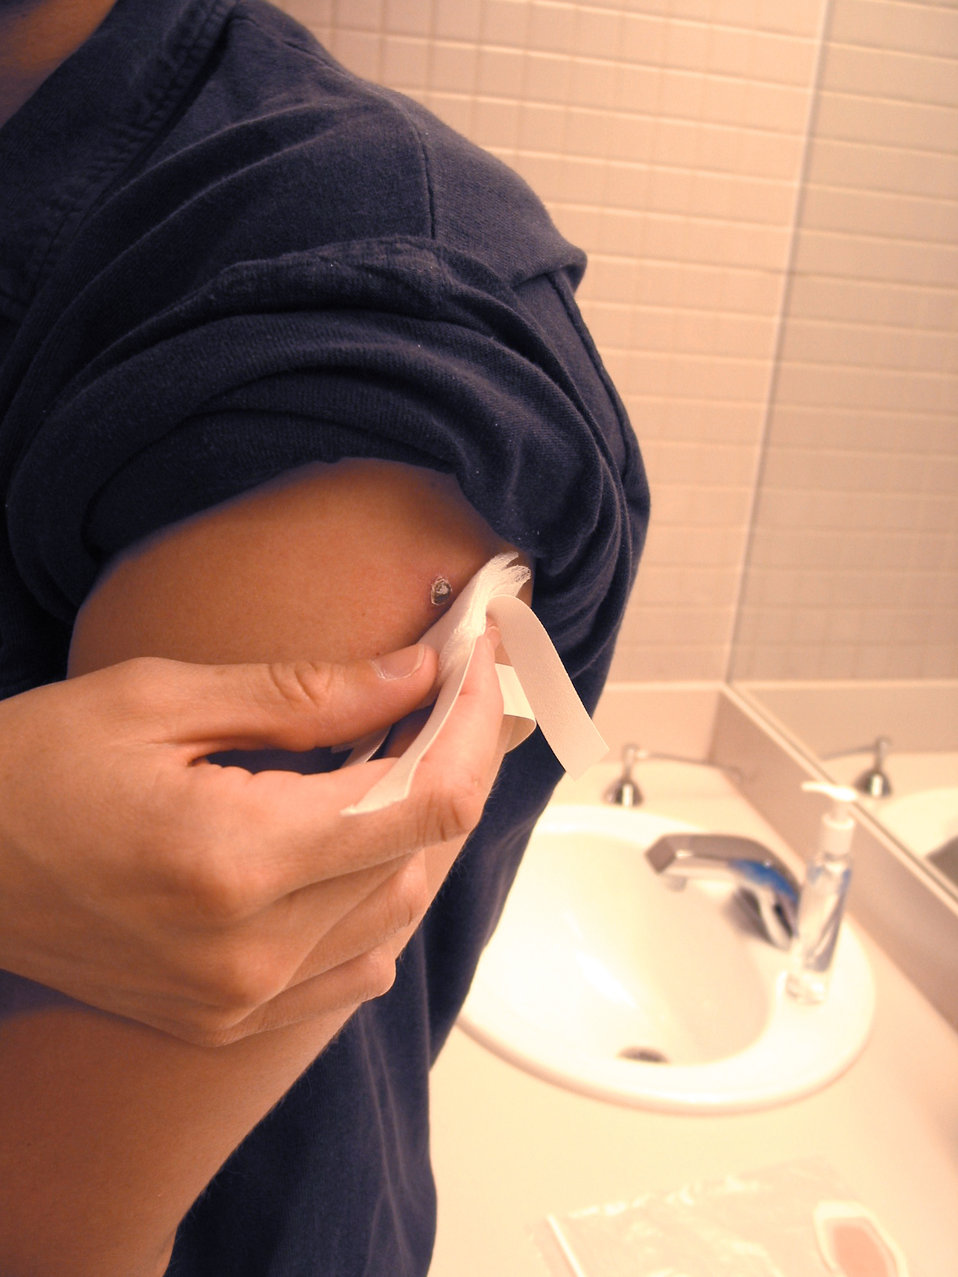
This demonstrates how a smallpox vaccinee covers his vaccination site with a gauze bandage and medical tape.